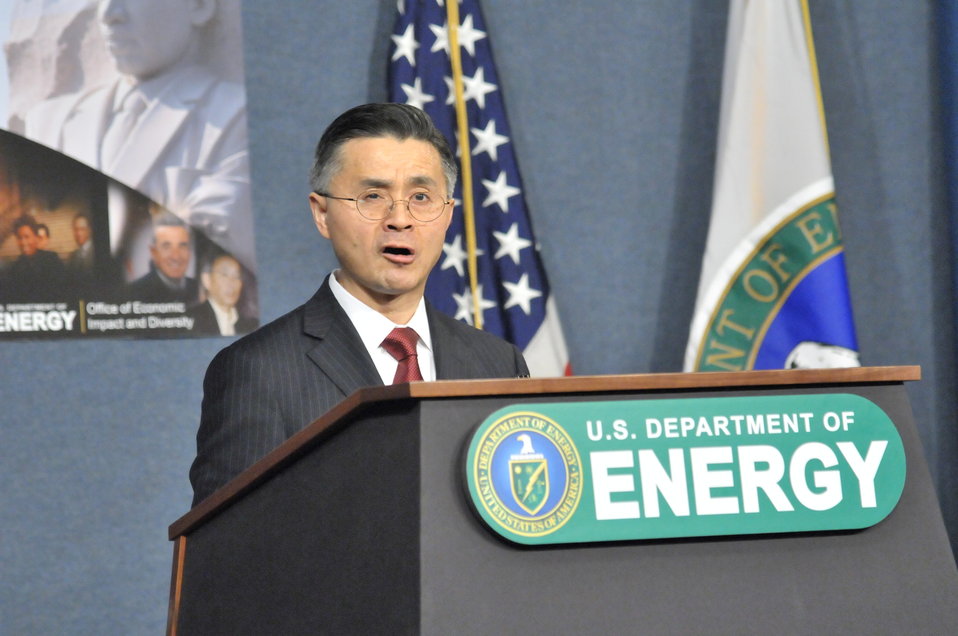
Department of energy -martin luther king / Black history month commemorative program with doe secretary e. Moniz in attendance